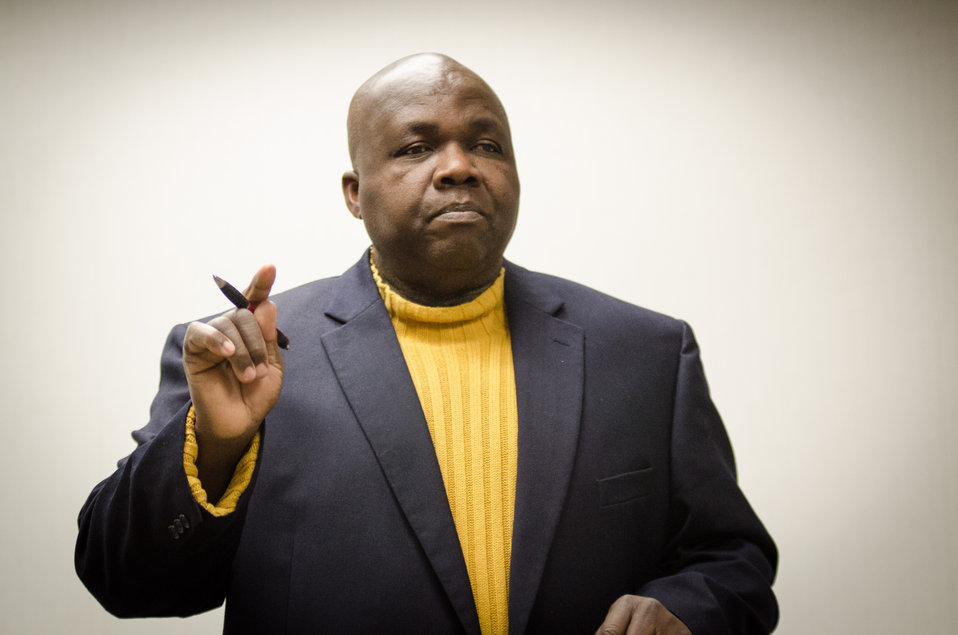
U.S. Department of Agriculture (USDA) National Institute of Food and Agriculture National Program Leader Dr. Denis Ebodaghe provides some insight to the importance of a proposed grant timetable to farmers at the “Virginia State University (VSU), USDA and Virginia Farmers Working Together” outreach workshop in the VSU, L. Douglas Wilder building on Thursday, March 7, 2013, in Petersburg, VA. Farmers shared and learned new ways to do more with USDA services, and how to apply for programs that will help grow their business.